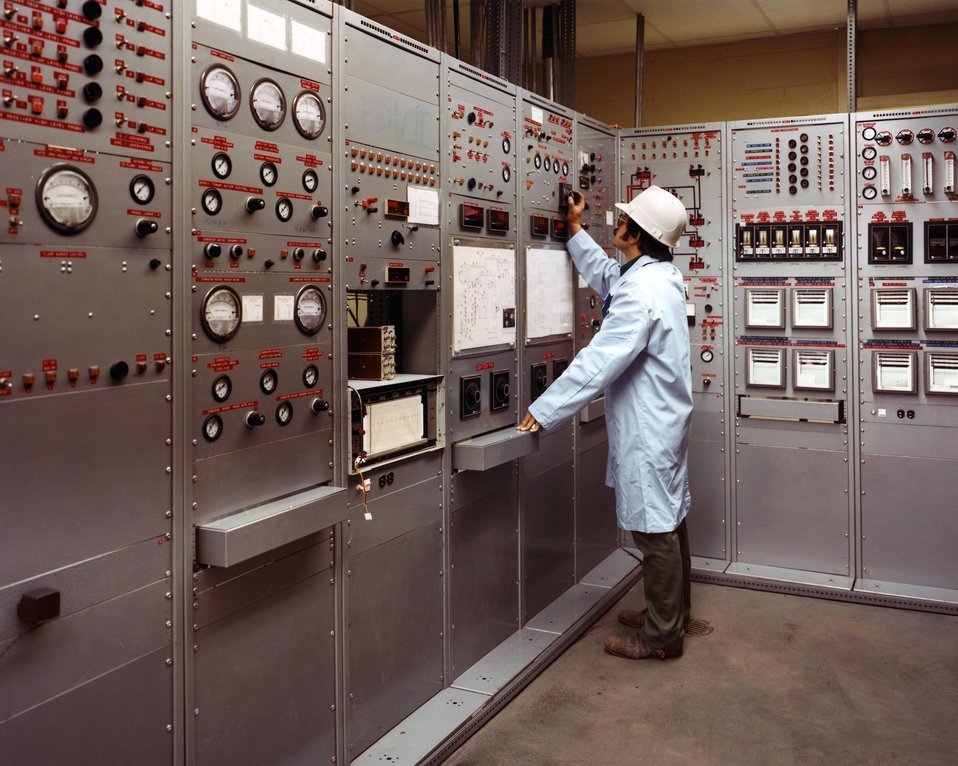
TECHNICIAN IN CONTROL ROOM WITH FLOW AND PRESSURE CONTROLLER(RIGHT) AND TEMPERATURE AND PRESSURE READOUTS (LEFT).

THE MULTI-SOLID FLUIDIZED-BED GASIFICATION TECHNOLOGY IS A METHOD OF CONVERTING BIOMASS, E.G., WOOD CHIPS, INTO METHANE-RICH GAS THAT COULD BE USED IN PLACE OF NATURAL GAS.THE METHOD USES A CHEMICAL CATALYST IN A REACTOR SYSTEM TO GASIFY BIOMASS. THIS REACTOR IS LESS COMPLEX IN DESIGN THAN A COAL GASIFICATION PROCESS AND ALLOWS THE USE OF SMALLER UNITS.